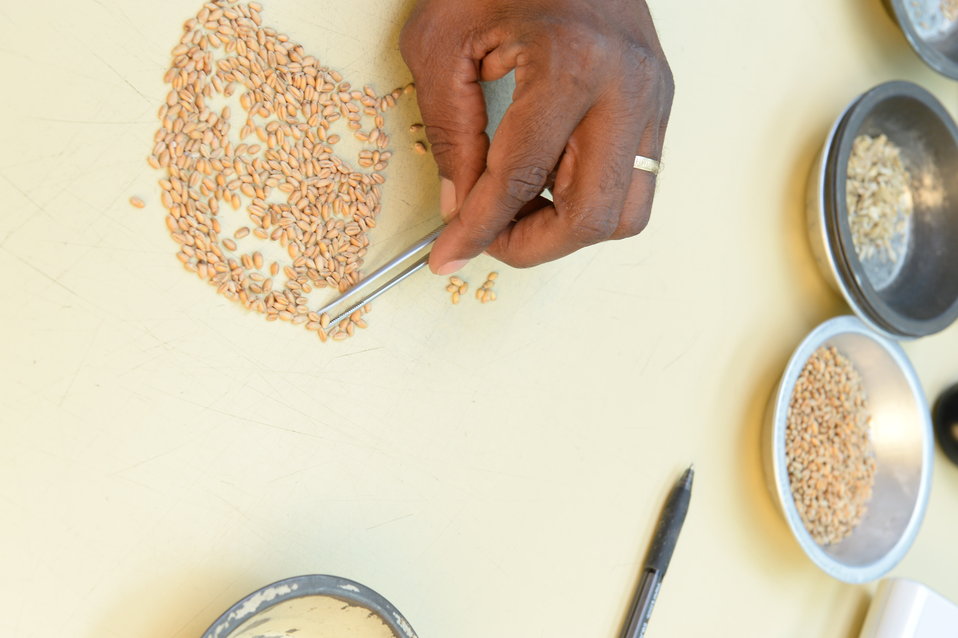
A U.S. Department of Agriculture (USDA) Grain Inspection, Packers and Stockyards Administration (GIPSA) Federal Grain Inspection Service (FGIS) scientist tests wheat at the FGIS inspection laboratory in New Orleans, LA on Monday, Nov. 18, 2013.